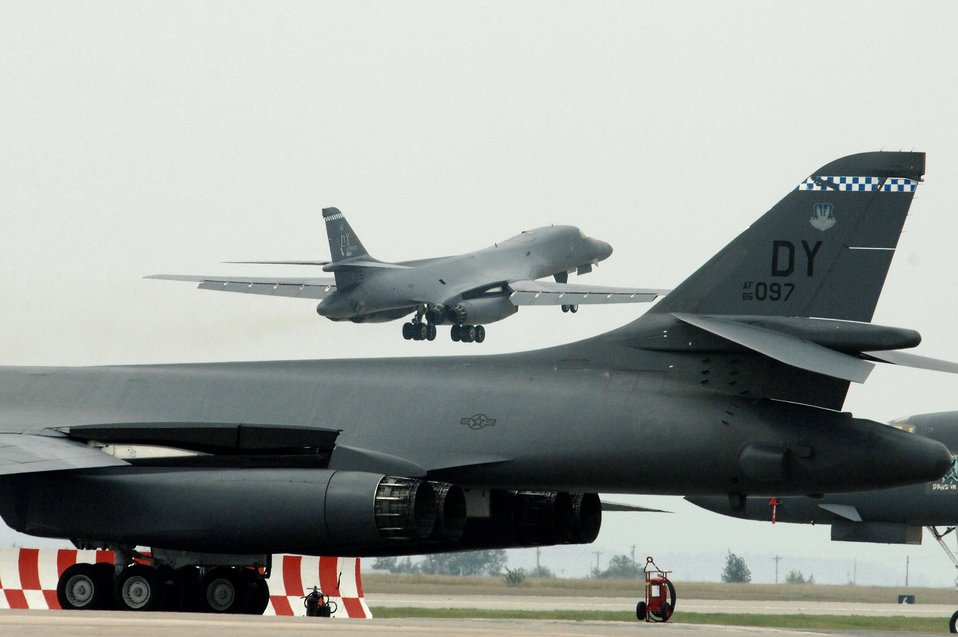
Dyess Airmen, aircraft arrive at Ellsworth

A B-1B Lancer from Dyess Air Force Base, Texas, takes off from Ellsworth AFB, S.D., Sept. 17. Ellsworth AFB is temporarily housing 20 of the B-1B aircraft during the repair of 6,600 feet of runway at Dyess AFB. Approximately 550 Dyess AFB Airmen are also temporaily based at Ellsworth AFB.